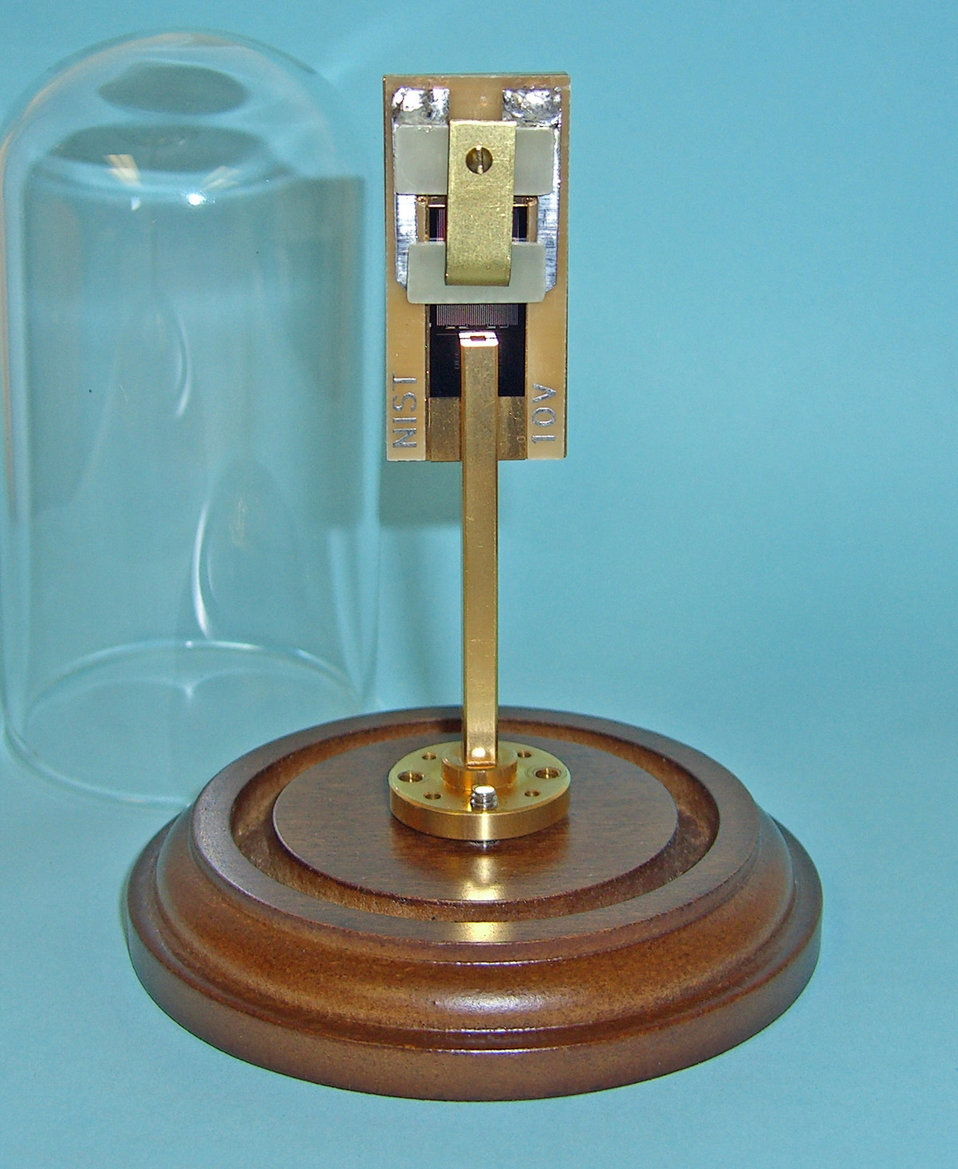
Original chip holder and waveguide

(1989) Original chip holder and waveguide that delivered microwave power to early 10-volt standard chips
From the History of NIST Quantum Voltage Standards.